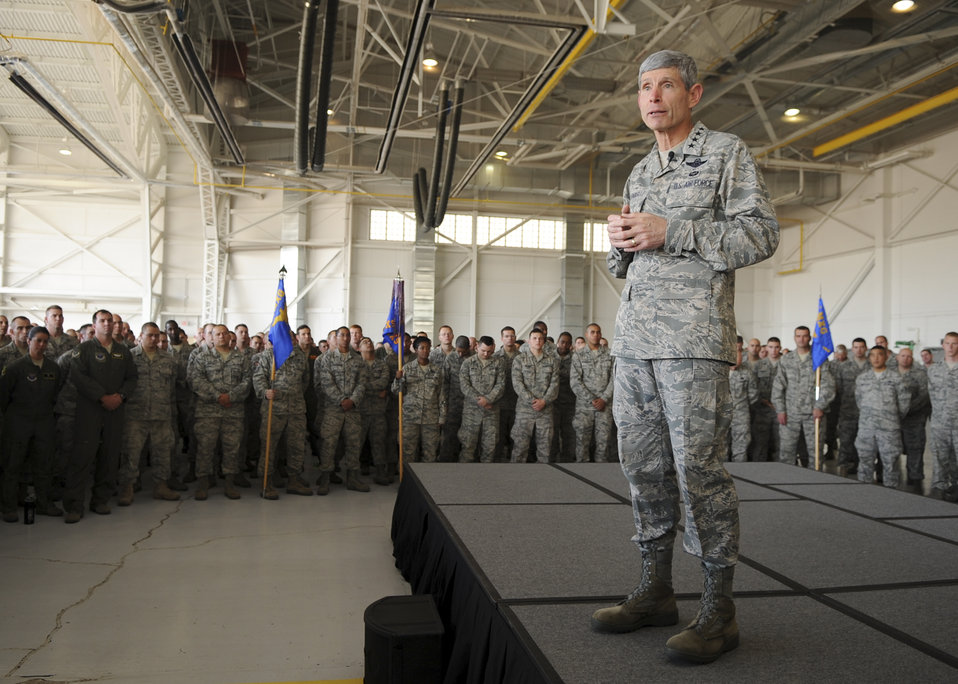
CSAF visits Minot AFB

Air Force Chief of Staff Gen. Norton Schwartz speaks to Airmen Oct. 4, 2011, during an all-call at Minot Air Force Base, N.D. Schwartz expressed gratitude for their efforts in aiding the Minot, N.D., community, as well as each other, during the flooding this past summer.